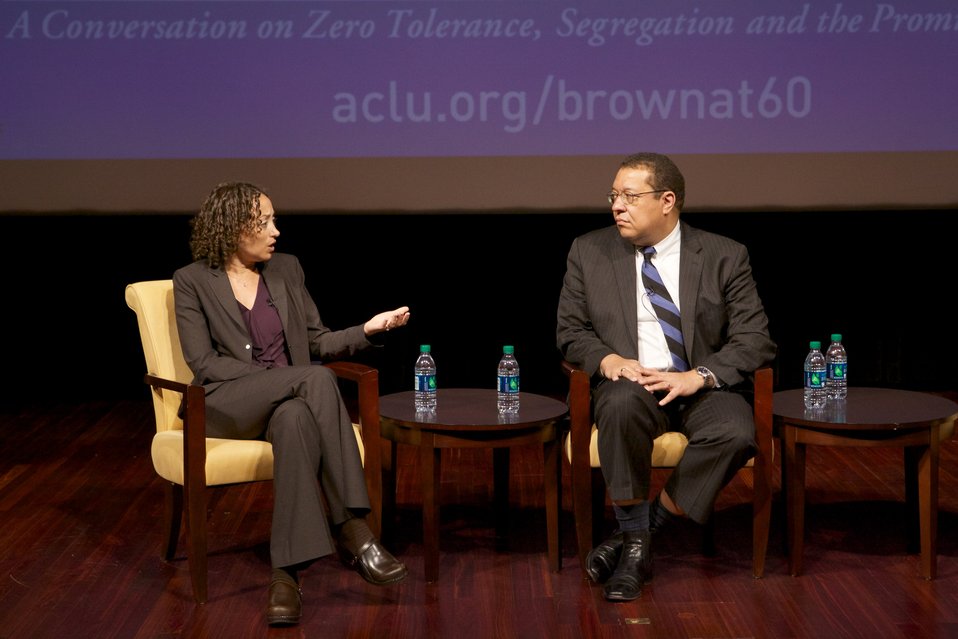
Brown at 60: Is Full Equality Within Our Grasp? A Conversation on Zero Tolerance, Segregation, and the Promise of Justice